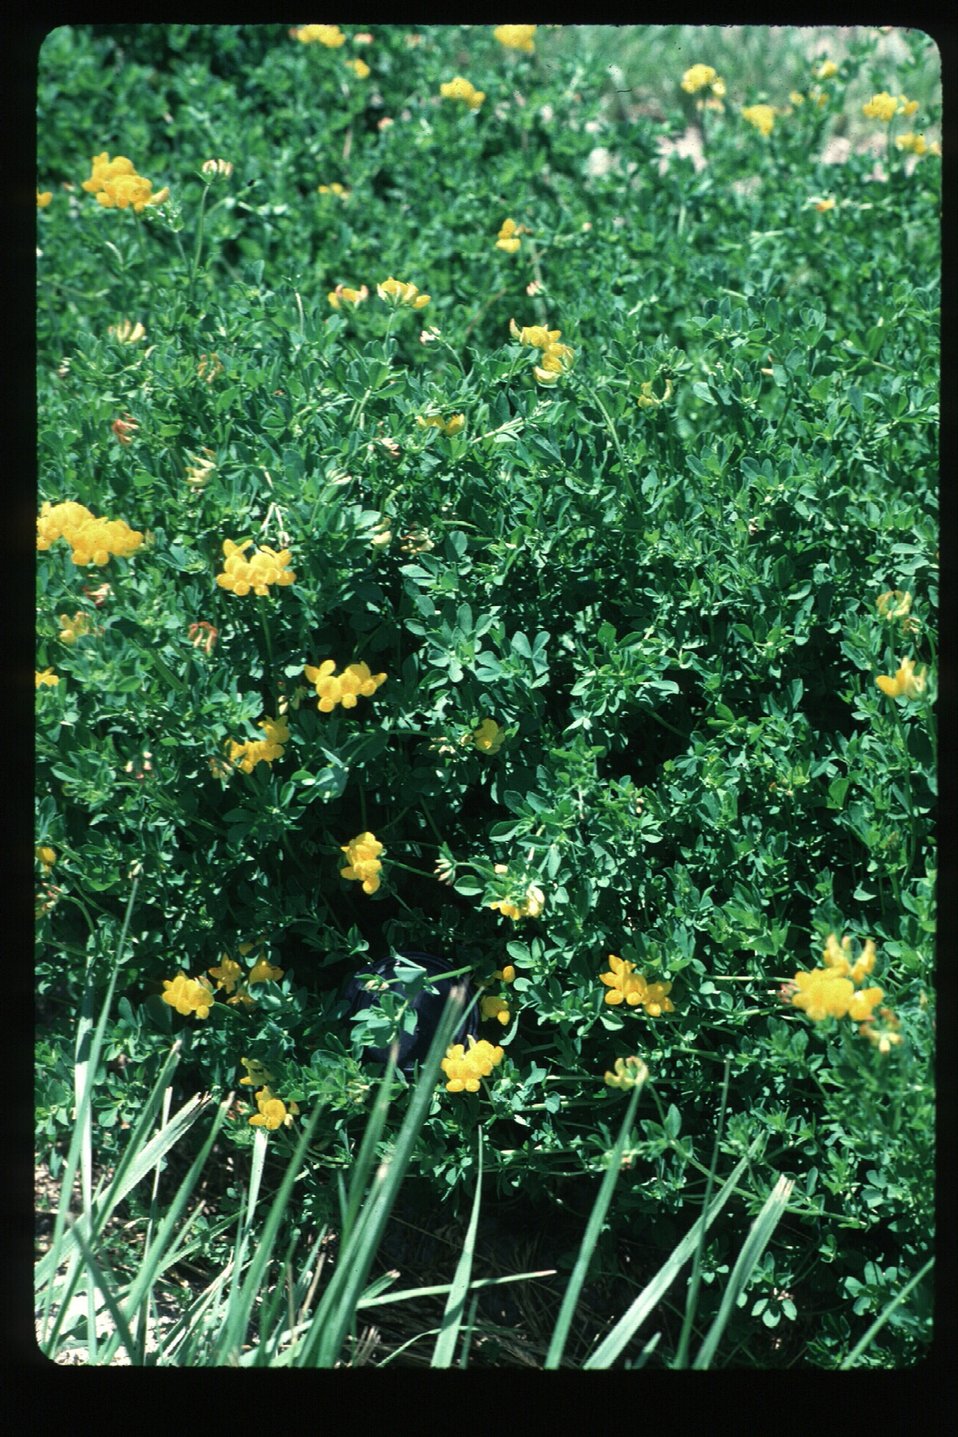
Brush, grasses Wildflowers